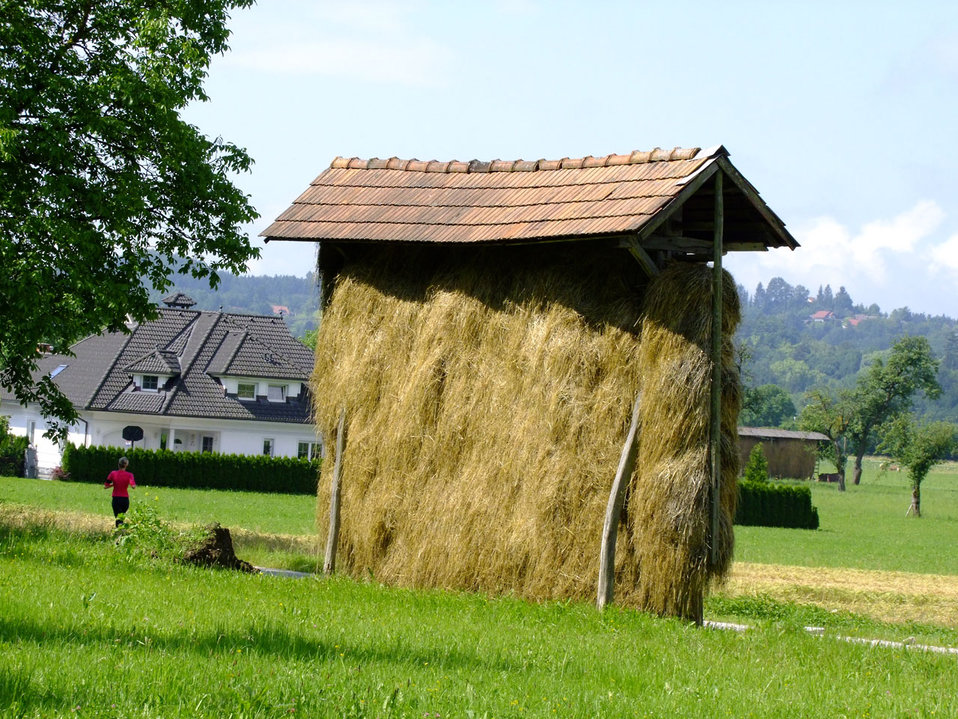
Summer morning

Cool summer morning sunday is great to take a walk in slovenia country.